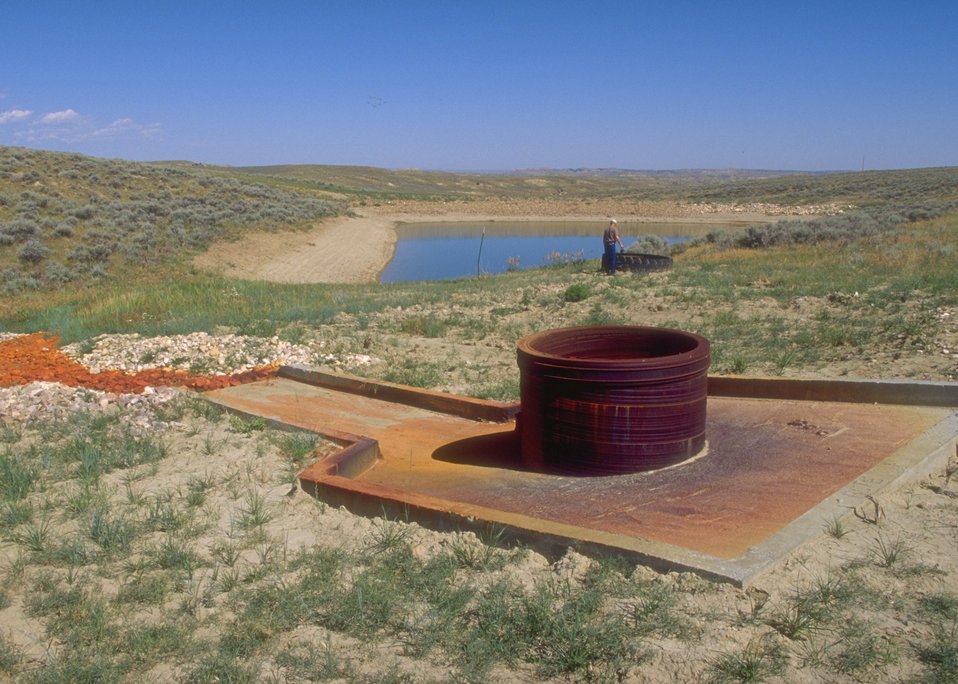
Reservoir for storage of water used in production of coal bed methane, Buffalo Field Office.